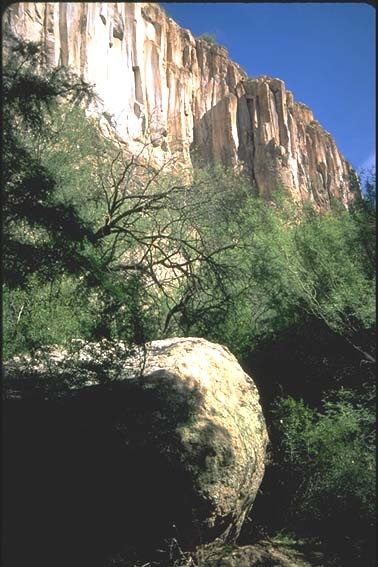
Aravaipa Canyon Wilderness